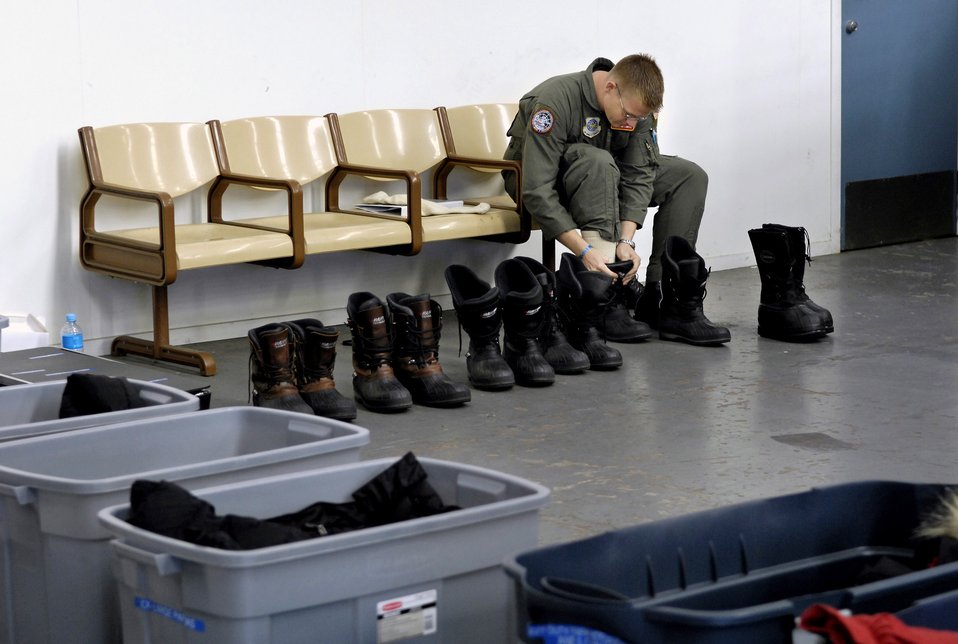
Getting ready to fly to McMurdo

Staff Sgt. Jake Lindsay, a C-17 Globemaster III loadmaster, tries on a pair of cold weather boots in preparation for the upcoming winter fly-in missions to Antarctica at Christchurch, New Zealand, Aug. 19. A C-17 and 31 Airmen from McChord Air Force Base, Wash., will begin the annual winter fly-in augmentation of scientists, support personnel, food and equipment for the U.S. Antarctic Program at McMurdo Station Aug. 20. WinFly is the opening of the first flights to McMurdo station, which closed for the austral winter in February.